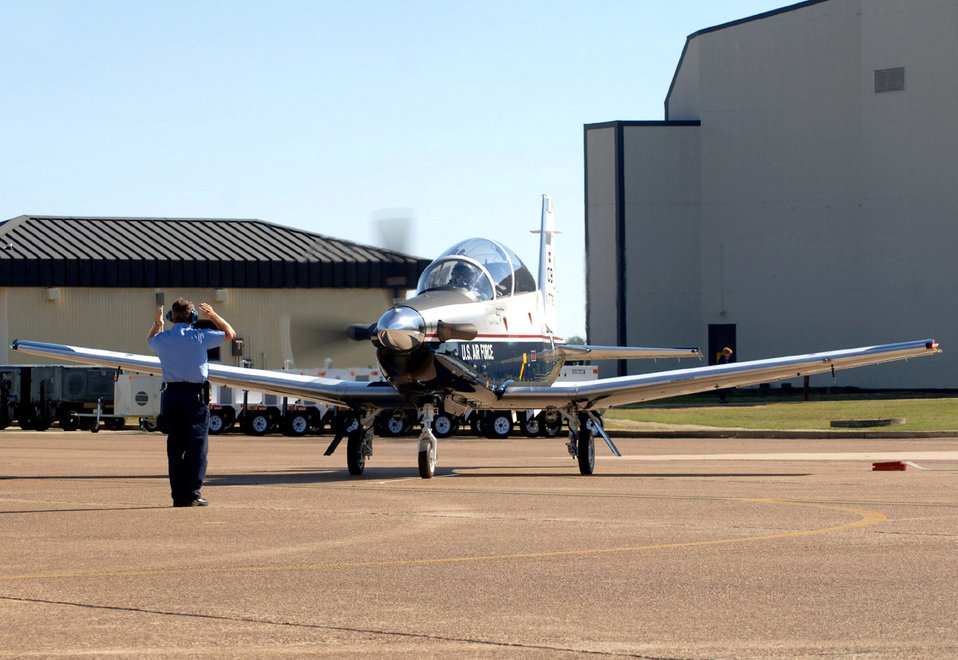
14th FTW welcomes new trainer aircraft

Lt. Col. Todd White taxis in with the first T-6 Texan assigned to the fleet at Columbus Air Force Base, Miss., fleet before presenting Col. Eric Theisen with the keys to the aircraft. Colonel White is the 41st Flying Training Squadron commander, and Colonel Theisen is the 14th Operations Group commander at Columbus AFB.